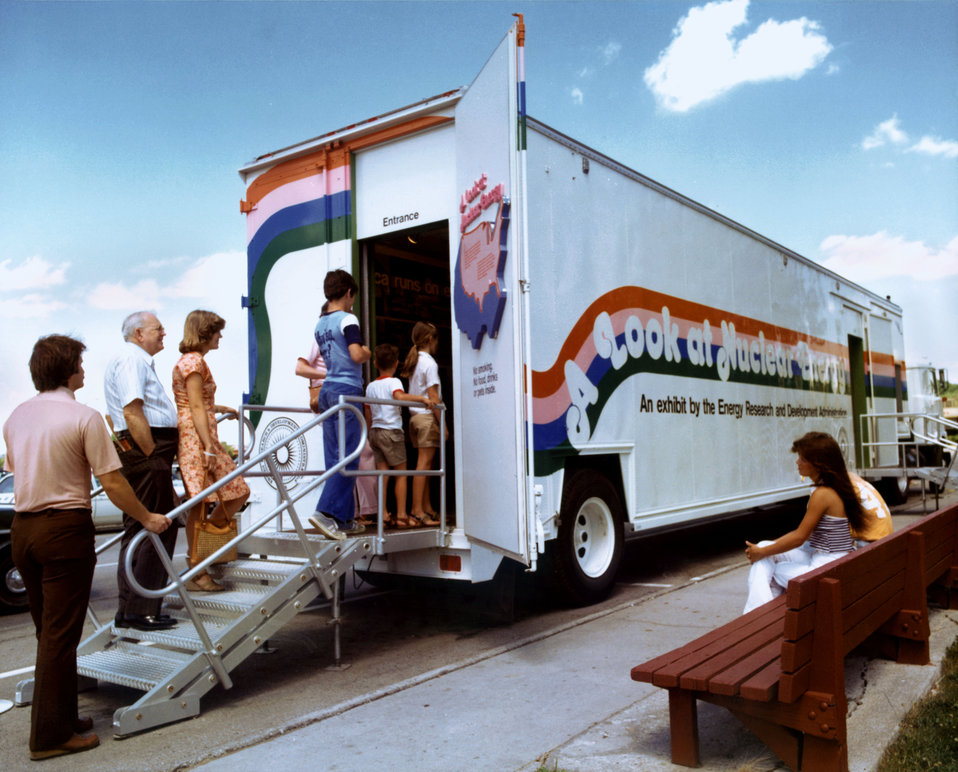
ERC Traveling Exhibit Oak Ridge

77-316-8 DOE photo by Frank Hoffman

ERC Traveling Exhibit Oak Ridge Tennessee Nov. 1971